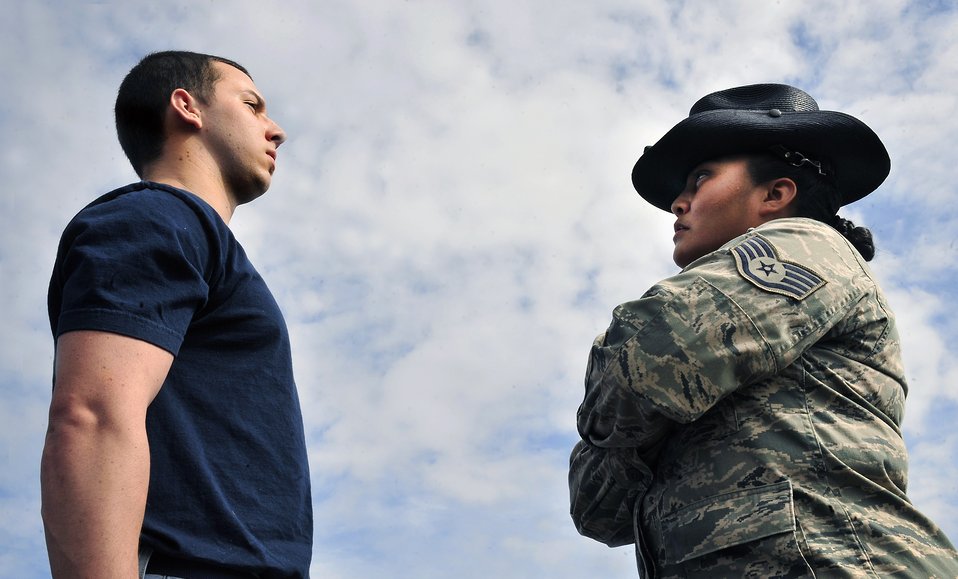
Locked up

Staff Sgt. Michelle Charlie waits for a reporting statement from Drew Hagen Oct. 11, 2011, during a mock training instructor drill at Scott Air Force Base, Ill. Officials at the 345th Recruiting Squadron scheduled the drill to give future Airman an opportunity to experience basic training and ask questions. Charlie is a former military training instructor, and Hagen is a Delayed Entry Program member.